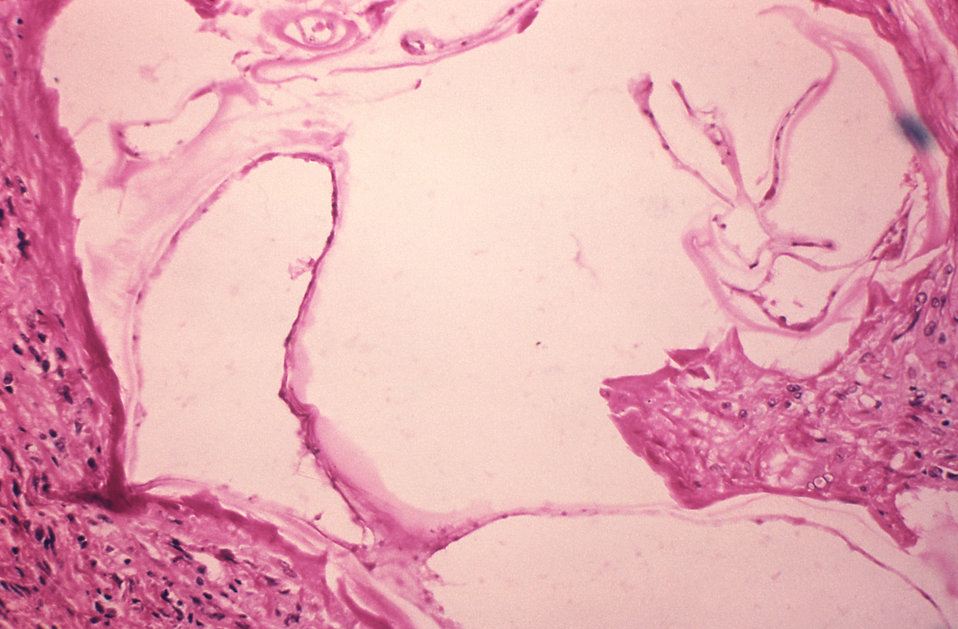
This photomicrograph reveals the presence of Echinococcus vogeli taken from a gorilla at the Los Angeles Zoo.